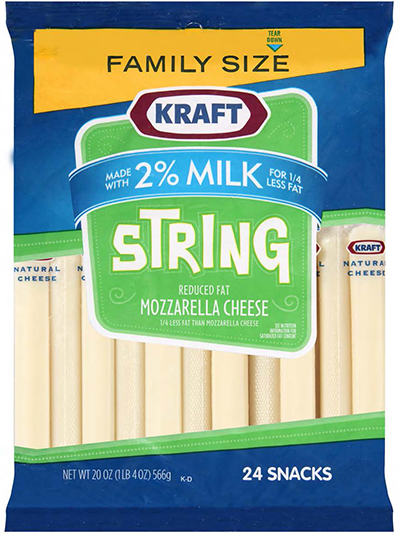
RECALLED – Cheese

October 25, 2013 – Product Recall – Kraft Voluntarily Recalls Some Varieties of Kraft And Polly-O String Cheese And String Cheese Twists Due to Premature Spoilage.